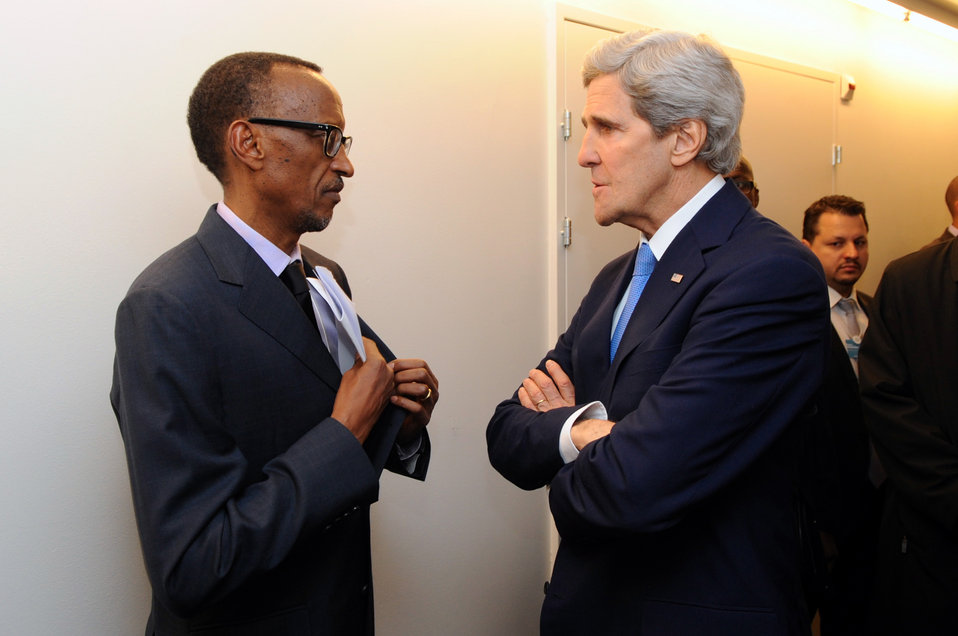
Secretary Kerry Chats With Rwandan President Kagame in Davos

U.S. Secretary of State John Kerry chats backstage with Rwandan President Paul Kagame after delivering the keynote speech at the World Economic Forum in Davos, Switzerland, on January 24, 2014.